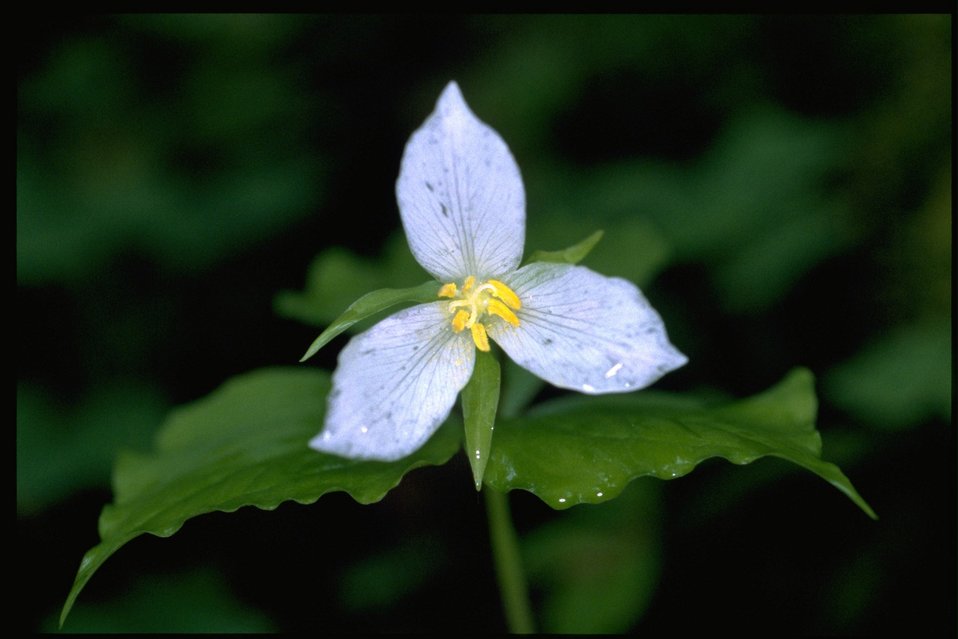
Closeup shot of Trillium ovatum.